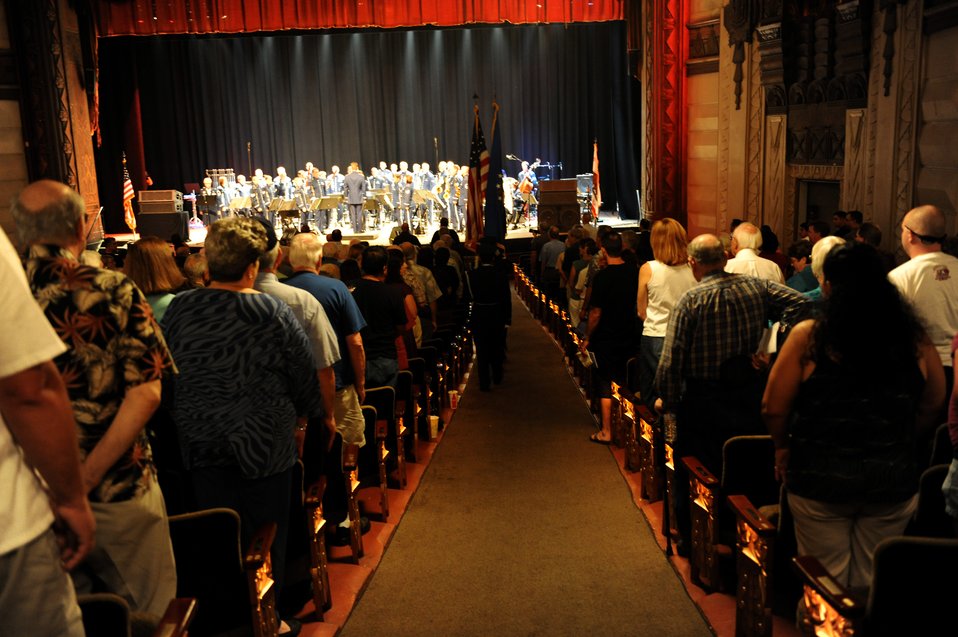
Air Force Week Los Angeles

Members of the Los Angeles Air Force Base Honor Guard post colors before the Band of the Golden West perform at the Warner Grand Theatre, San Pedro, Calif., Nov. 16. The band is performing during Air Force Week Los Angeles, an event designed to educate the local population about the Air Force's capabilities and missions through various activities and exhibitions in the Los Angeles area. It provides an up close and personal look at the men and women of the Air Force serving worldwide in the defense of freedom. Air Force Week Los Angeles runs Nov. 14-21.